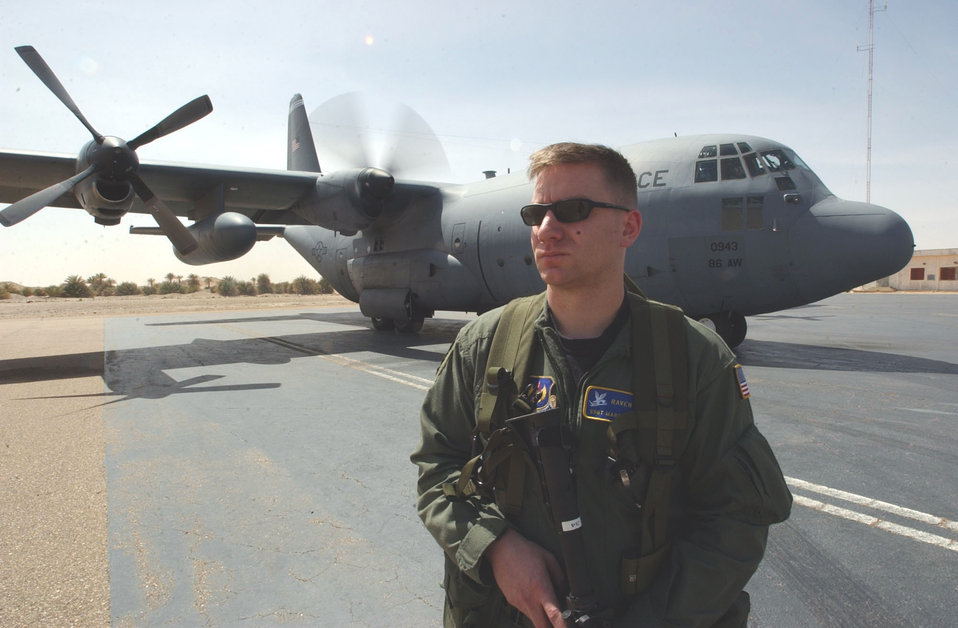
Military aid

FAYA-LARGEAU AIRPORT, Chad (AFPN) -- Staff Sgt. Marc Hawsey stands watch here March 13 as 86th Airlift Wing crews deliver more than 19 tons of humanitarian aid. Sergeant Hawsey is from the 786th Security Forces Squadron at Ramstein Air Base, Germany. The aid was delivered in response to Chad's request for assistance after its military engaged a group of terrorists and sustained casualties.